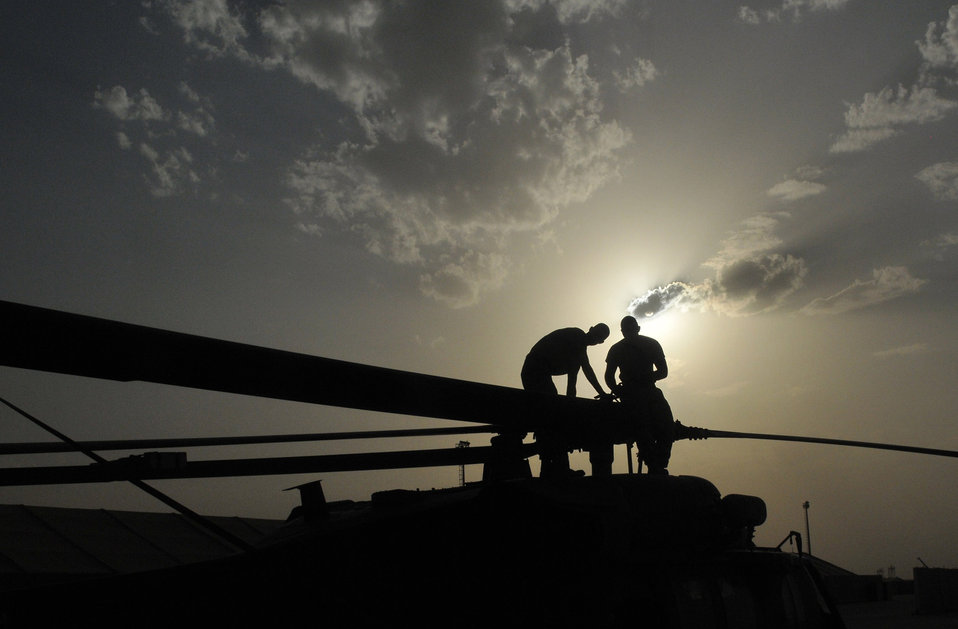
Looks straight to me

Airman 1st Class Tyler Lecates (left) and Staff Sgt. Michael Burch prepare a HH-60 Pave Hawk helicopter main rotor for propeller alignment Aug. 12, 2010, at Joint Base Balad, Iraq. The Airmen are with the 64th Expeditionary Helicopter Maintenance Unit. Airmen Lecates is deployed from Moody Air Force Base, Ga., and Sergeant Burch is deployed from Nellis AFB, Nev.